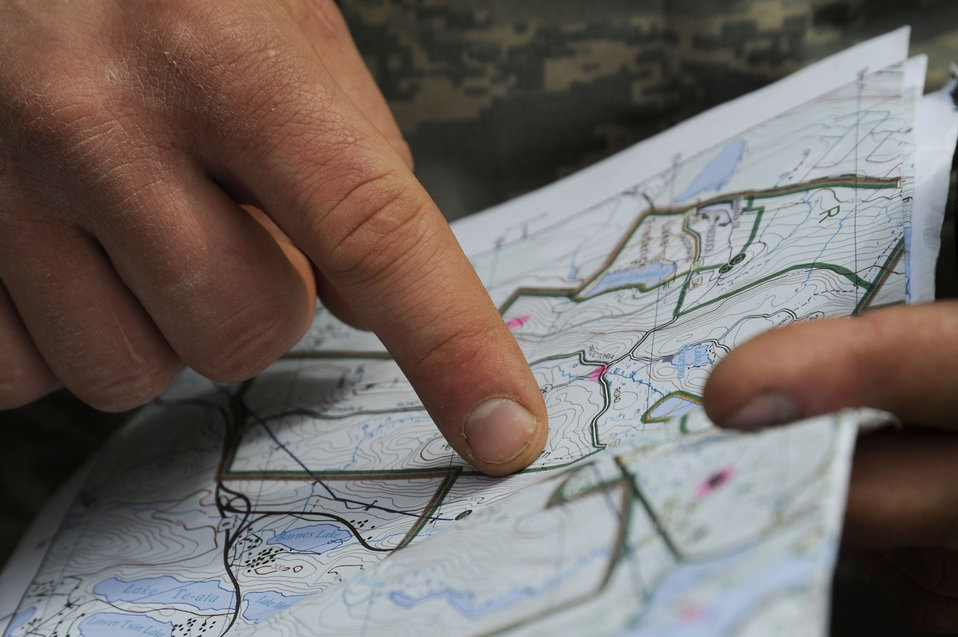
2012 Sandhurst Competition

A U.S. Air Force Academy cadet plans a route April 18, 2012, for the land navigation portion of the 2012 Sandhurst Competition at the U.S. Military Academy in West Point, N.Y. The two-day competition included cadets from around the world.